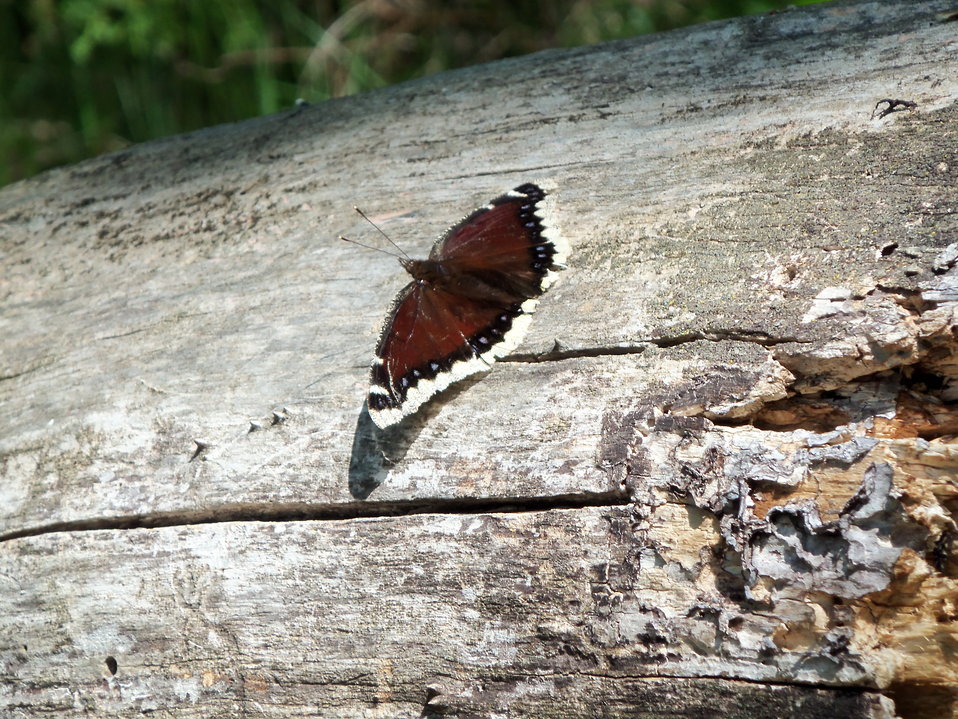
Mourning Cloak near a ground blind outside of O'neill, Nebraska while turkey hunting in early May 2012.

Photo Credit: Jamie Jones / USFWS

Photo Contest Entry #92